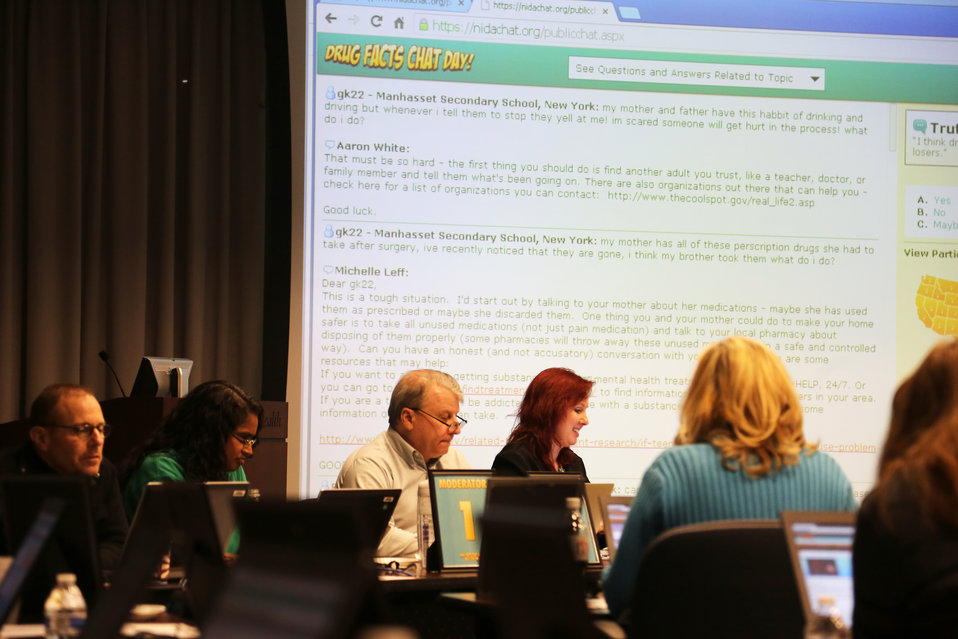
Keeping Kids Connected During Chat Day

Chat Day Event held by the National Institute on Drug Abuse during its National Drug Facts Week Jan. 27-Feb. 2, 2014. Scientists from NIDA and other agencies answered questions about drugs from teens around the world on Jan. 29th in Rockville, Maryland.